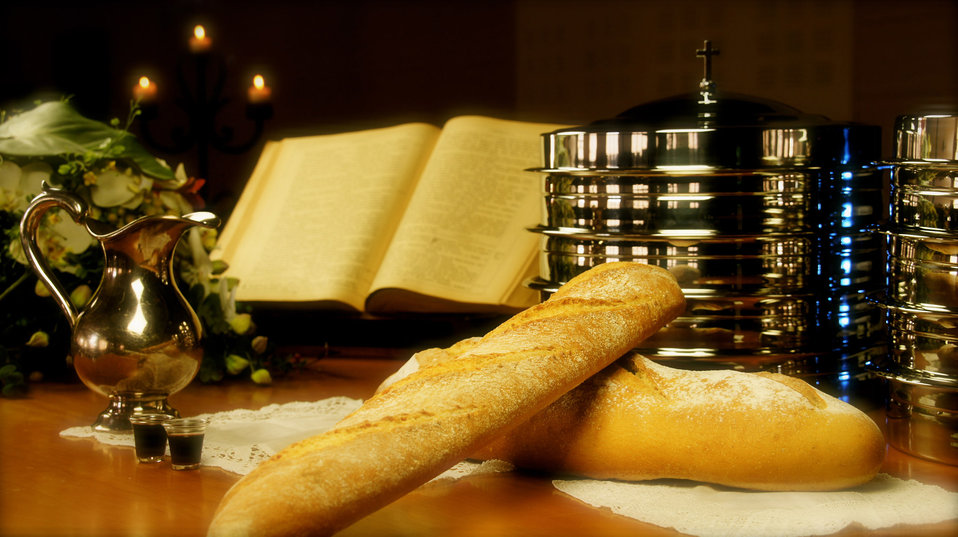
Holy supper.